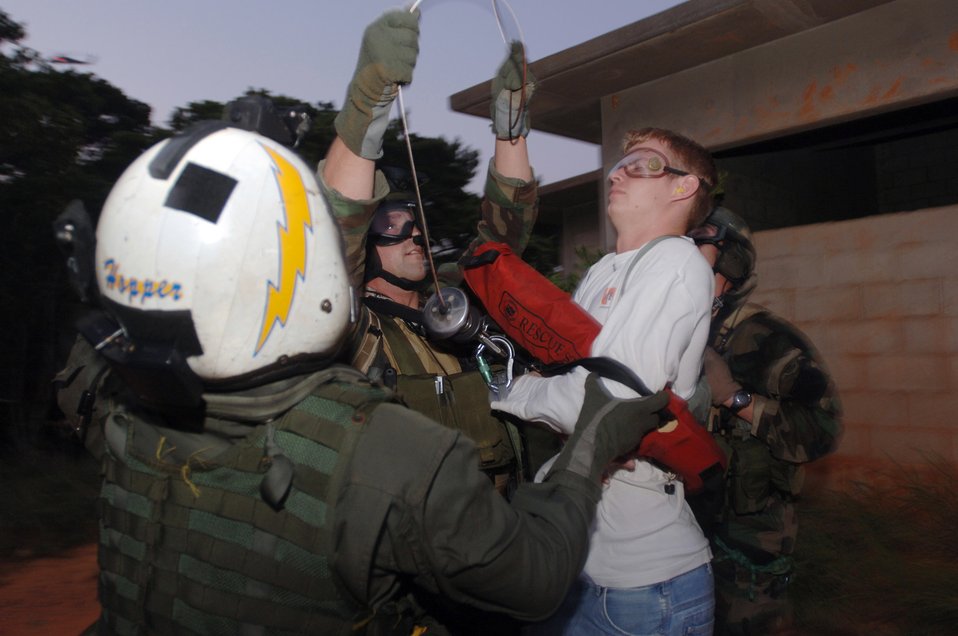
Airmen join Sailors, Marines for JASEX 05

KADENA AIR BASE, Japan -- U.S. Air Force pararescuemen with the 31st Rescue Squadron and a Sailor